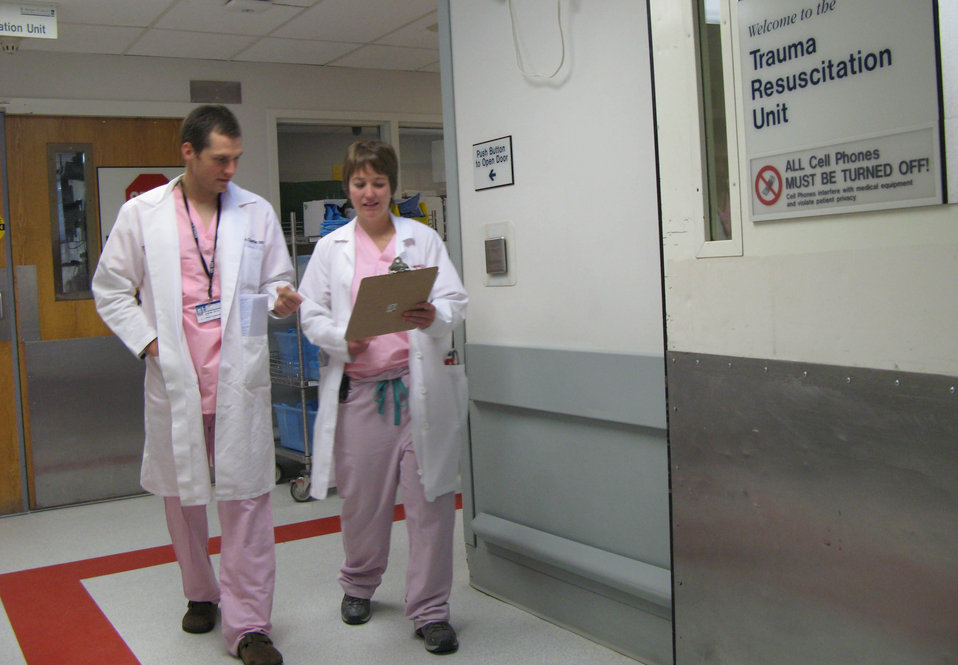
Pre-deployment trauma training

Capt. (Dr.) Morgan Gettle (left) and Capt. (Dr.) Morgan Gettle, both flight surgeons attending the Centers for Sustainment of Trauma and Readiness Skills program at the R. Adams Cowley Shock Trauma Center in Baltimore, said they’re gaining valuable pre-deployment trauma care experience. Both are deploying to Afghanistan from from Cannon Air Force Base, N.M.